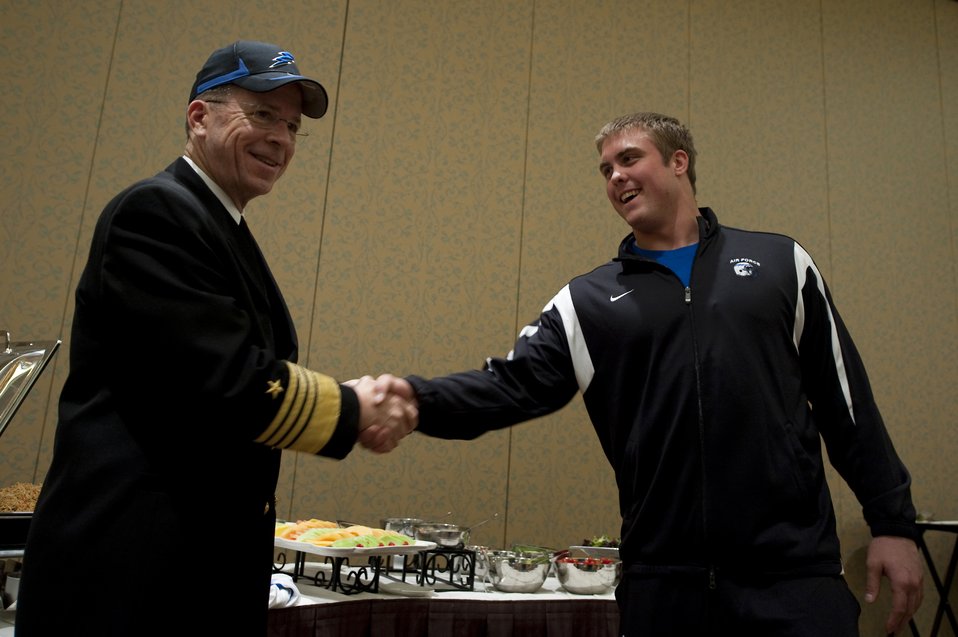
CJCS visits with Academy Falcons

Adm. Mike Mullen, chairman of the Joint Chiefs of Staff, receives an Air Force Academy Falcons ball cap from senior nose guard Ben Garland Dec. 30, 2009, after meeting with the team during a visit the day before the Armed Forces Bowl in Fort Worth, Texas. The Falcons won the bowl game, defeating the University of Houston Cougars 47-20.